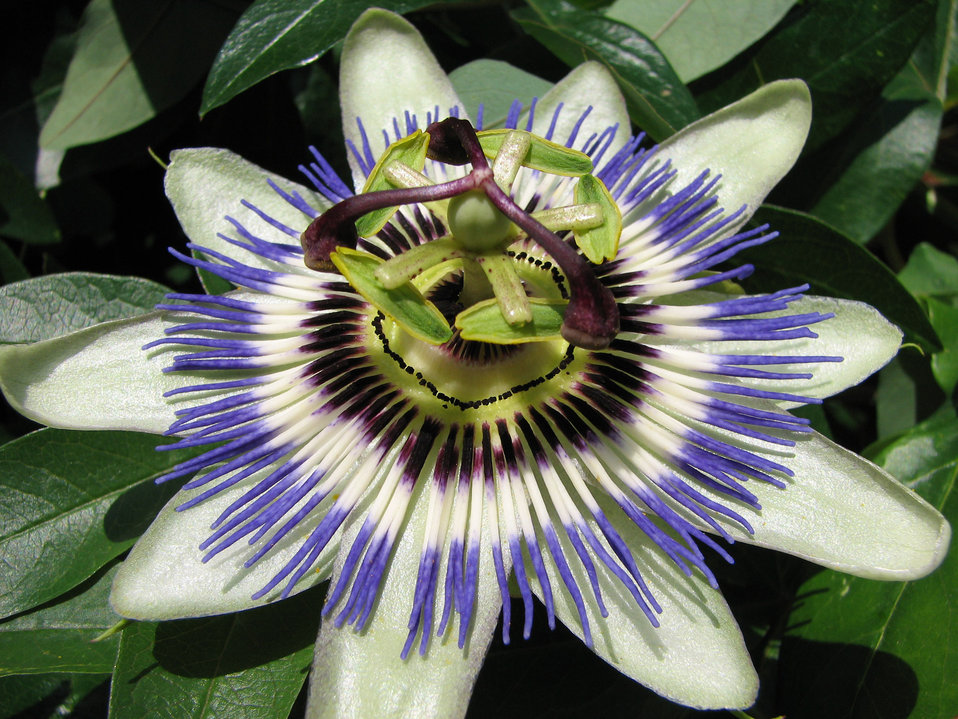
Passion flower.